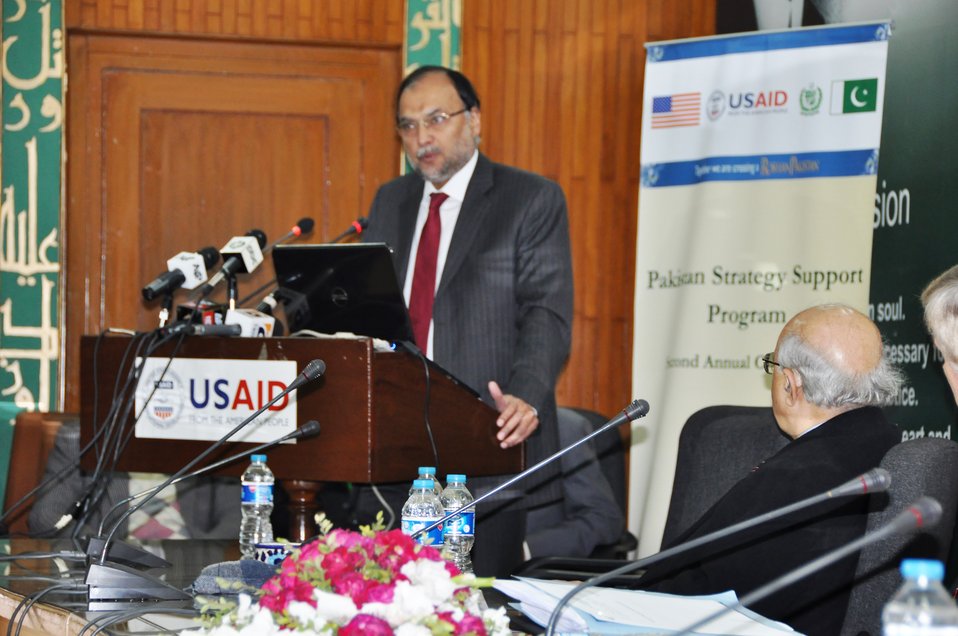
Jan 21, 2014- PSSP Event in Islamabad

Prof. Ahsan Iqbal, Federal Minister for Planning, Development and Reforms and Deputy Chairman of the Planning Commission while addressing the participants at the event.